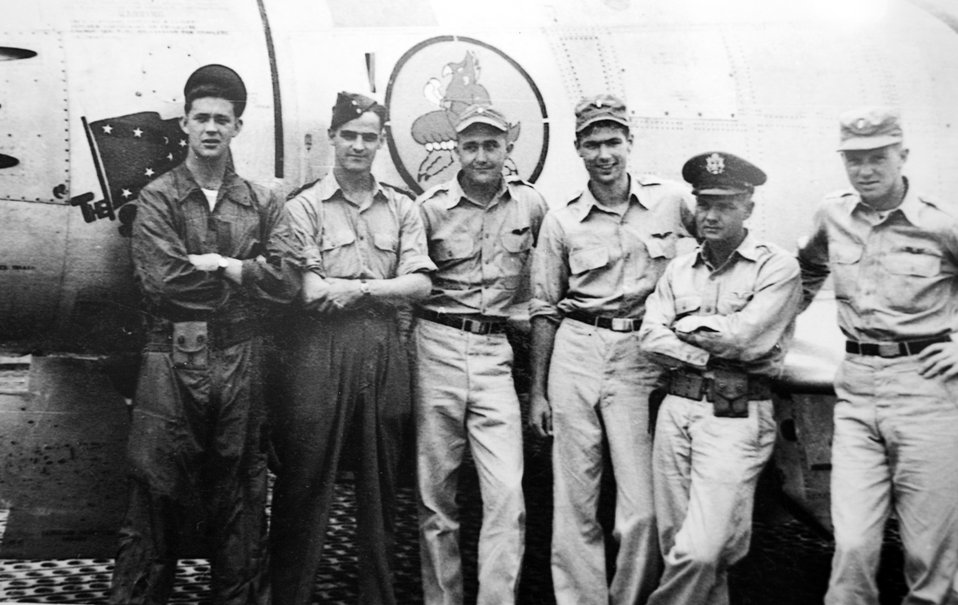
Retired general becomes Air Force's newest fighter ace

Retired Lt. Gen. Cleveland (third from right) was deployed to South Korea in March 1952, where he flew F-86s as a flight commander with the 4th Fighter Interceptor Wing at Kimpo Air Base. Fifty-five years after the Korean War, the Air Force has recognized General Cleveland as a fighter ace for his accomplishments of five MiG-15s kills and one probable.